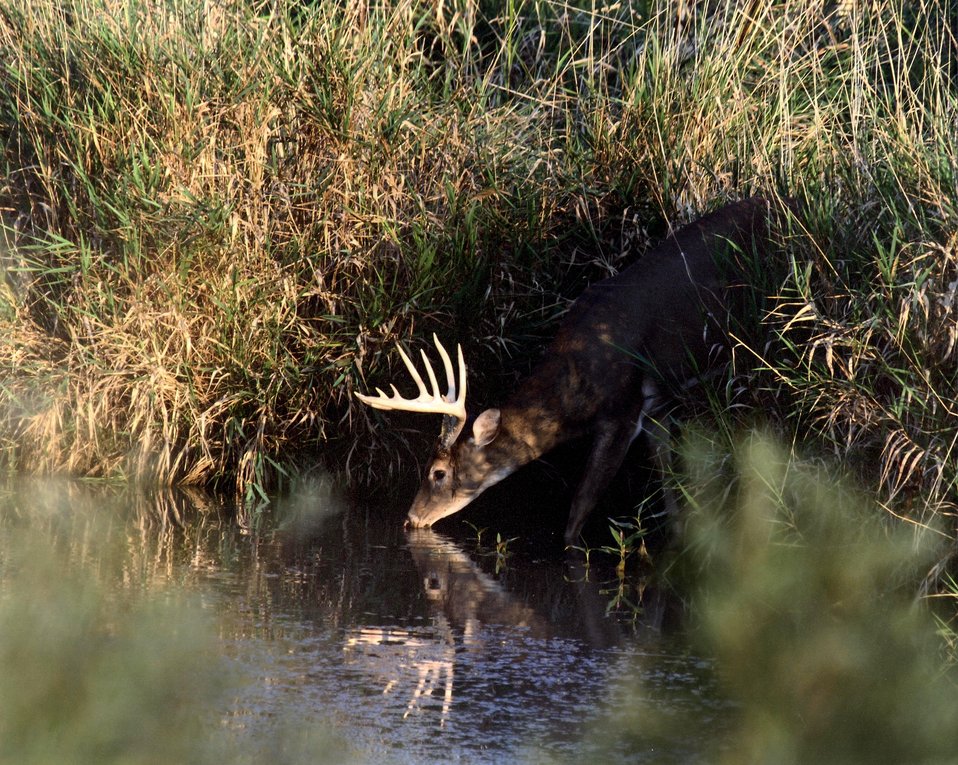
Reflections

Photo by Jeff Novess/USFWS.

Shiawassee National Wildlife Refuge 2013 Photo Contest